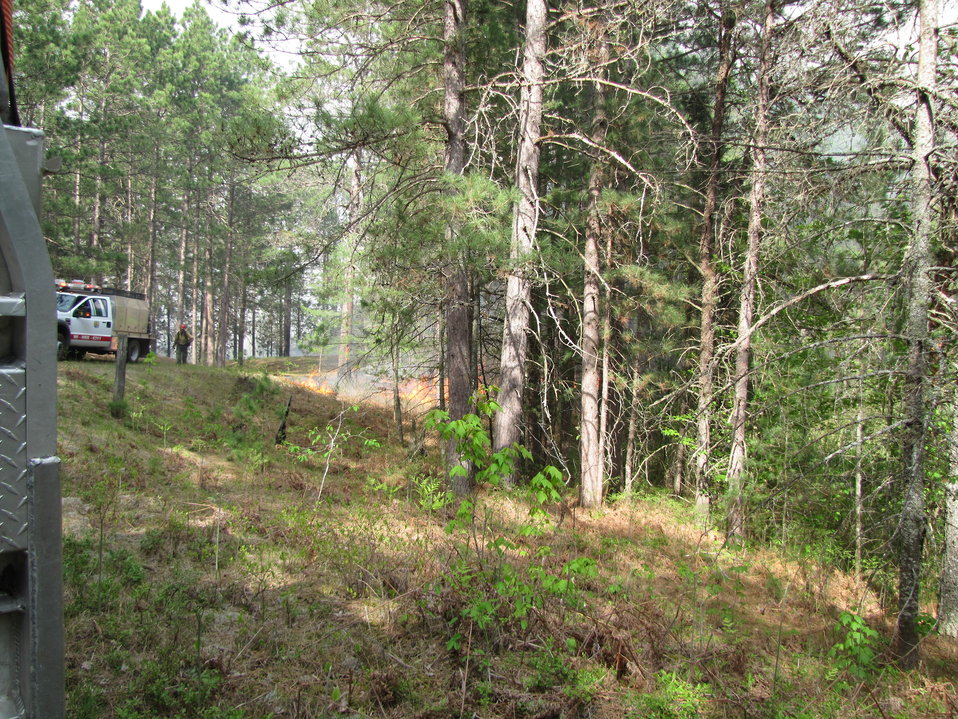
The Back Fire Spreading

Lighting a back fire off Pine Creek Road to keep the main fire contained.